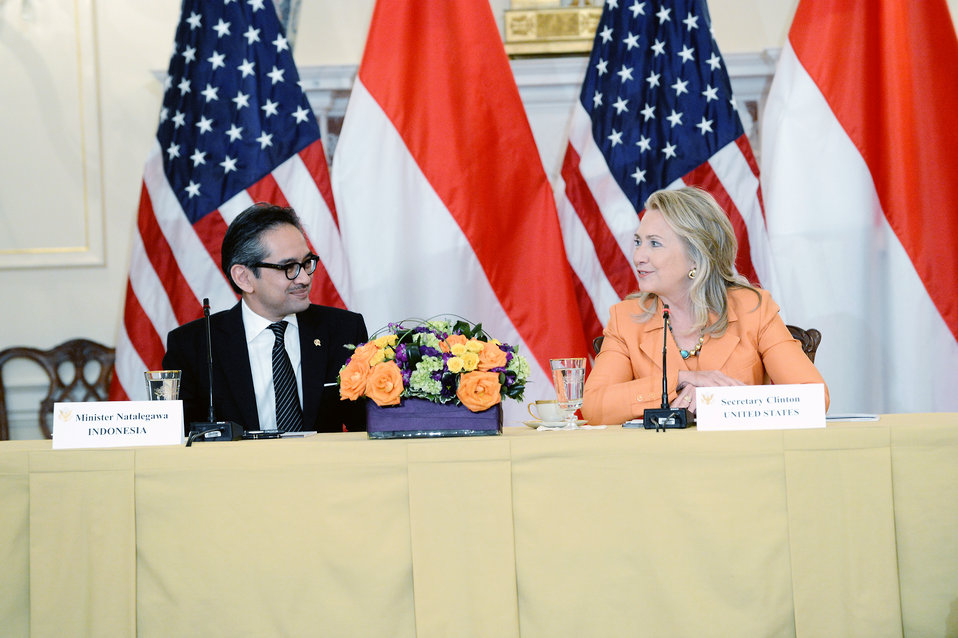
Secretary Clinton Hosts the Third Annual U.S.-Indonesian Joint Commission Meeting

U.S. Secretary of State Hillary Rodham Clinton hosts the third annual U.S.-Indonesian Joint Commission meeting with Indonesian Foreign Minister R.M. Marty Natalegawa at the U.S. Department of State in Washington, D.C., September 20, 2012.